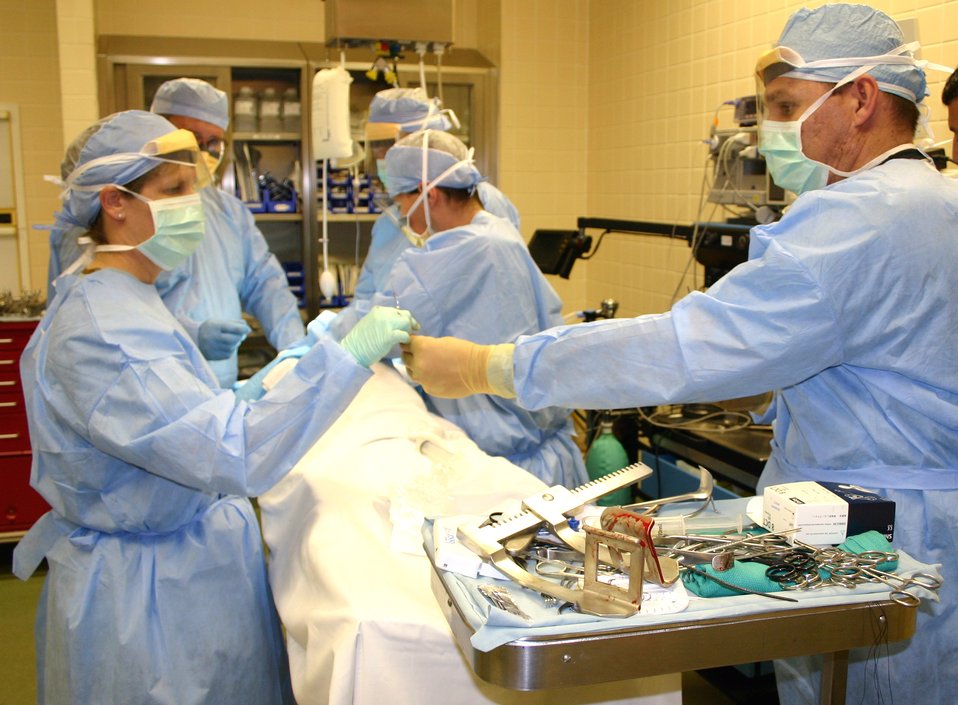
Advanced trauma life support training returns to Wilford Hall

Maj. Brenda Frye (left) accepts a scalpel from Lt. Col. (Dr.) Craig Ruder during the surgical skills portion of Advanced Trauma Life Support training at Lackland Air Force Base, Texas. They are with the 59th Medical Wing and participated in the two-day course as part of their pre-deployment training.